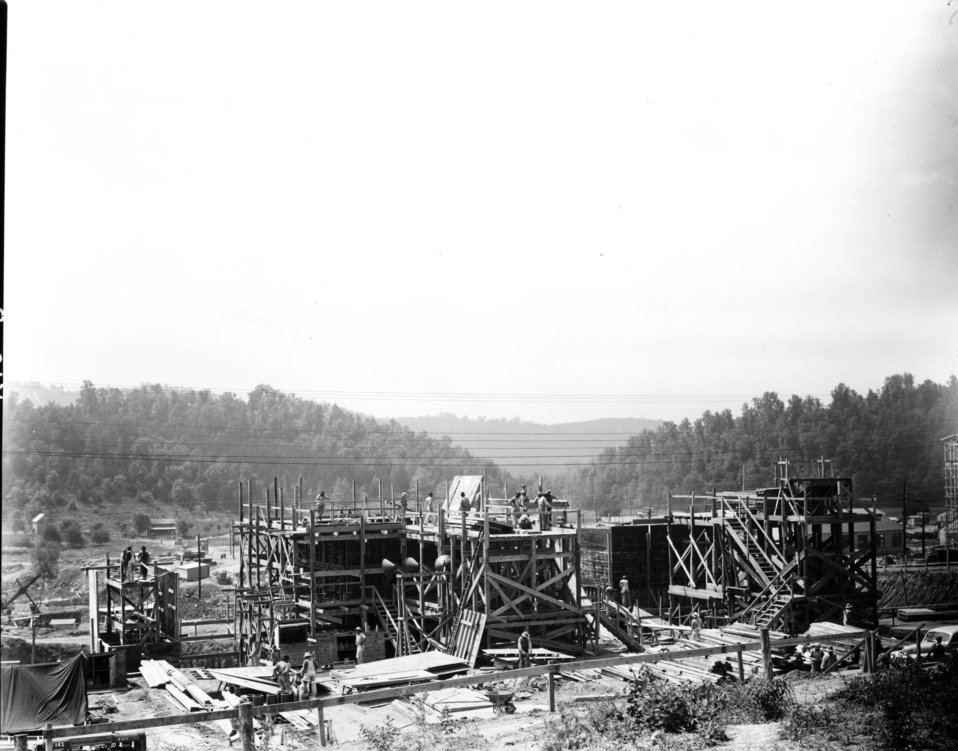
X-10 at Oak Ridge